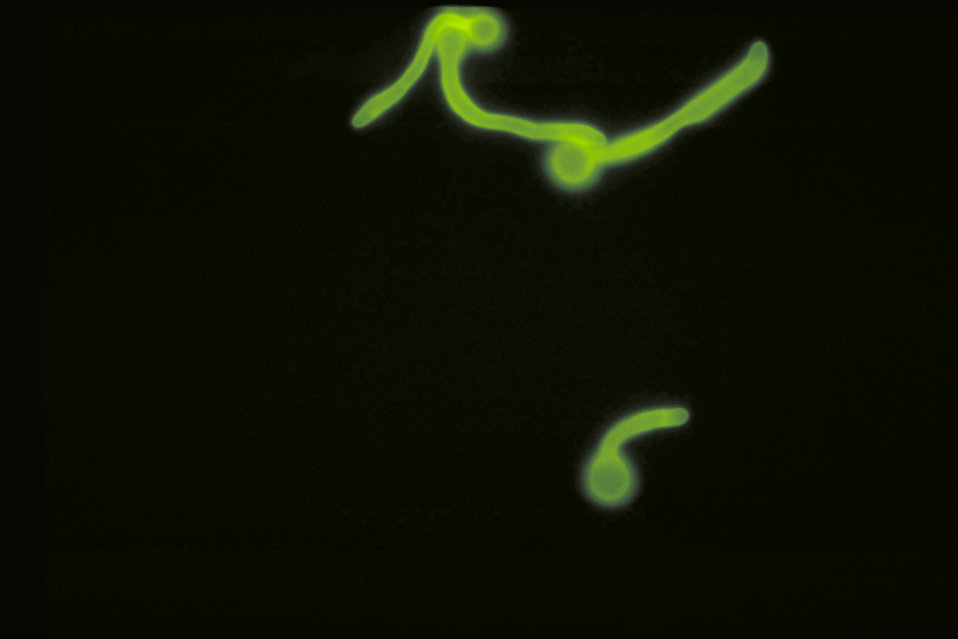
This photomicrograph depicted a number of Candida albicans fungal organisms displaying germ tube morphology.